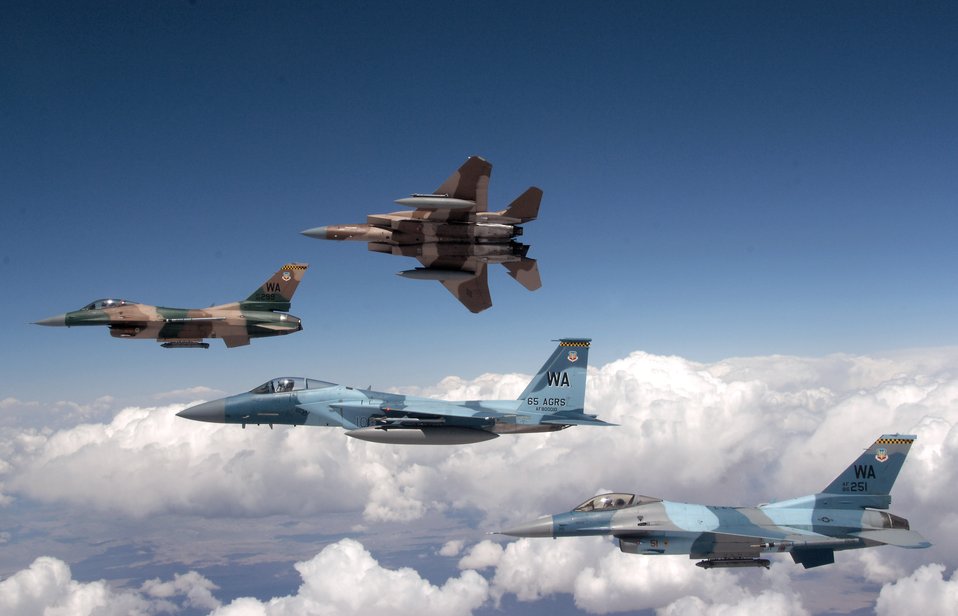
Aggressors provide challenging, realistic threat replication

A flight of Aggressor F-15 Eagles and F-16 Fighting Falcons fly in formation June 5 over the Nevada Test and Training Range. The jets are assigned to the 64th and 65th Aggressor squadrons at Nellis Air Force Base, Nev. The Aggressor mission is to prepare the combat air forces, joint and allied aircrews for tomorrow's victories with challenging and realistic threat replication, training, academics and feedback.